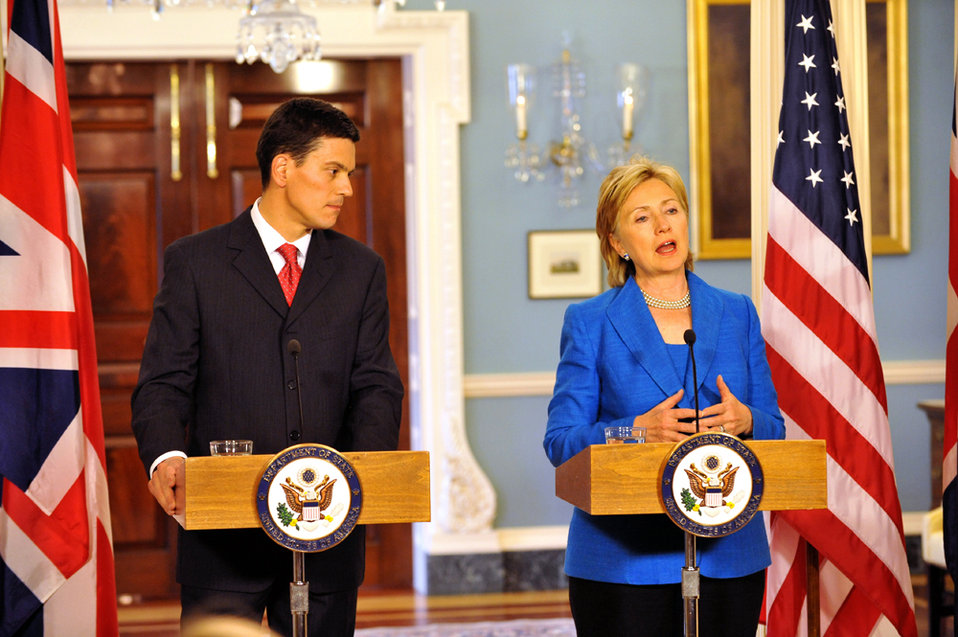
Secretary Clinton Meets With U.K. Foreign Minister

U.S. Secretary of State Hillary Rodham Clinton participates in joint press availability with The Right Honorable David Miliband, M.P., Secretary of State for Foreign and Commonwealth Affairs of the United Kingdom of Great Britain and Northern Ireland, in the Treaty Room of the U.S. Department of State in Washington, DC July 29, 2009.